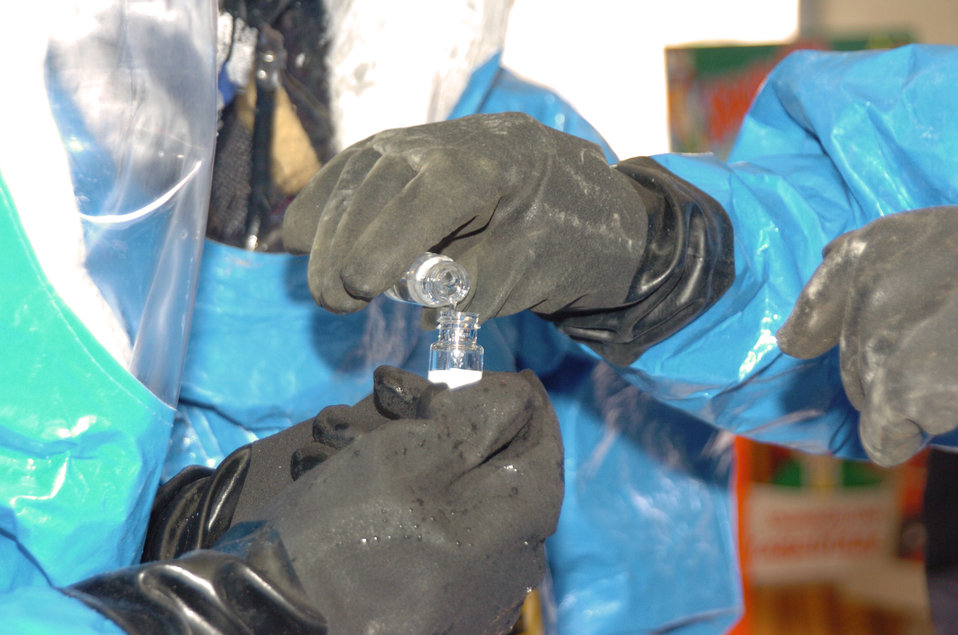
Guard civil support teams provide WMD expertise to communities

DUGWAY, Utah -- Members of the 61st Weapons of Mass Destruction Civil Support Team prepare a sample for testing during an exercise here. In the event of an attack or incident involving chemical, biological or radiological agents, nuclear hazards or high-yield explosives, guardsmen with the Arkansas-based team respond to, advise and assist local and regional authorities.